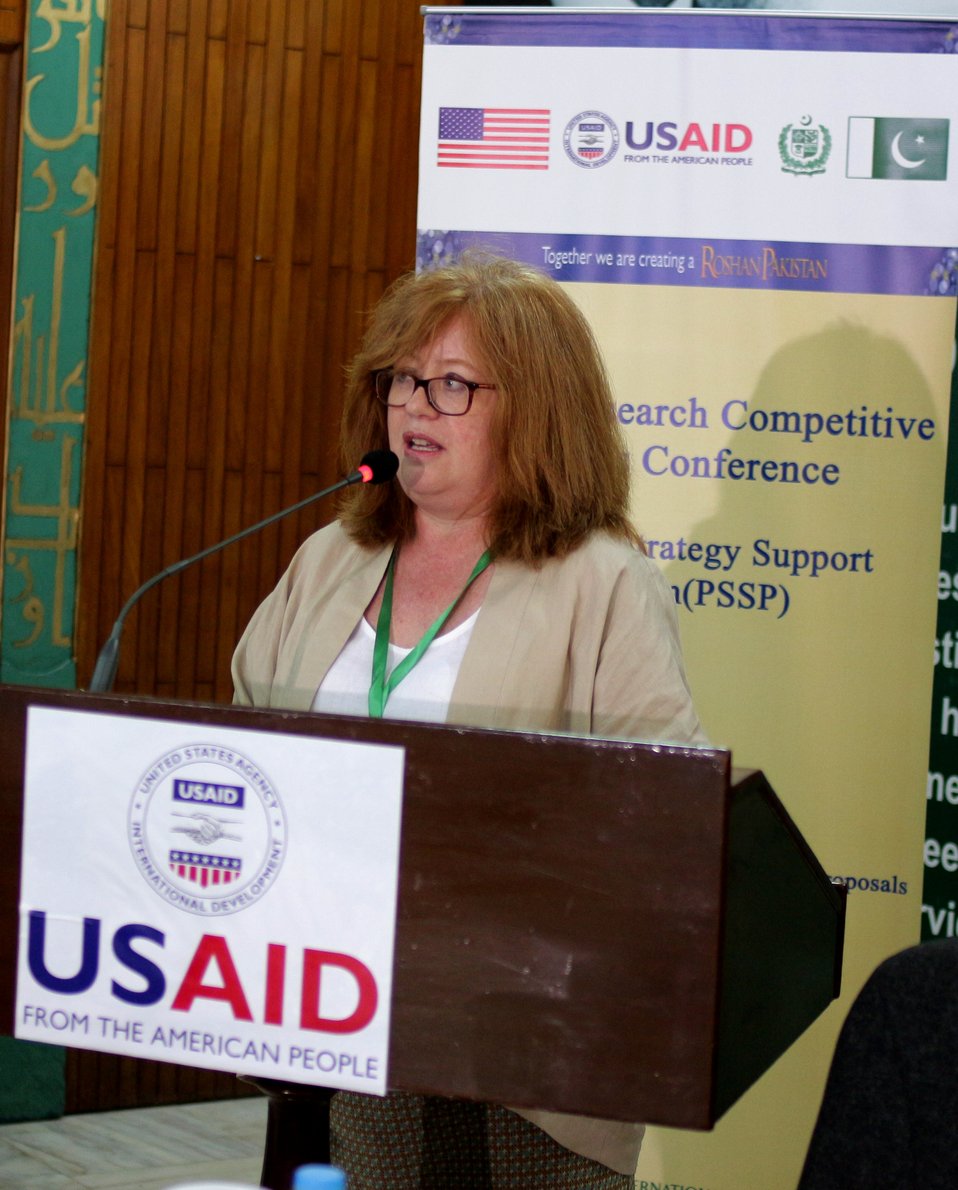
PSSP - CGP-IV Research ConferenceJune 14, 2014

Ms. Catherine Moore, Deputy Mission Director USAID-Pakistan speaking at the Inaugural Session of the Fourth Research Competitive Grants Conference, organized by PSSP